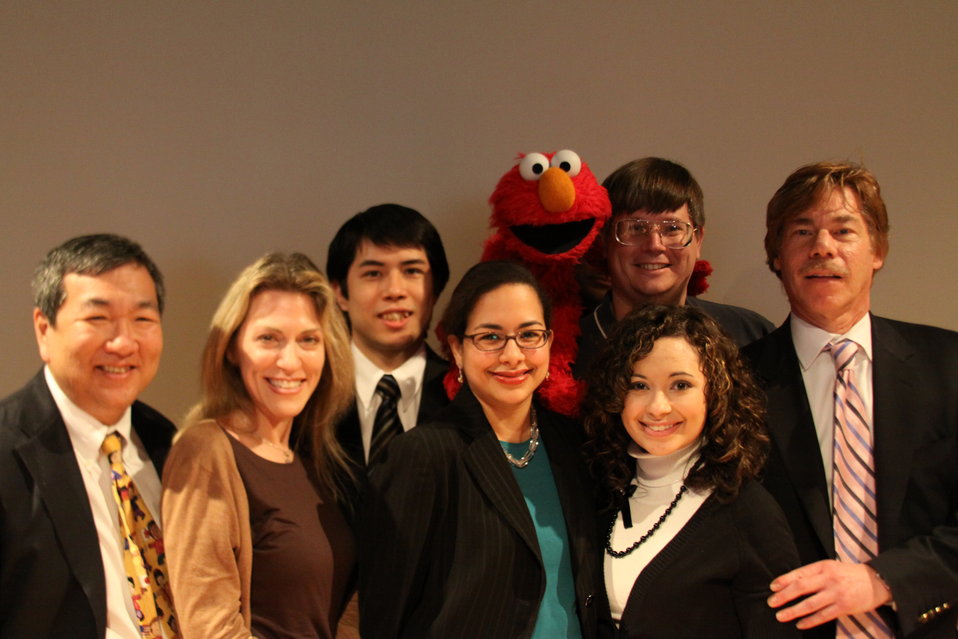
March 12, 2010- Smithsonian Broadband with Elmo